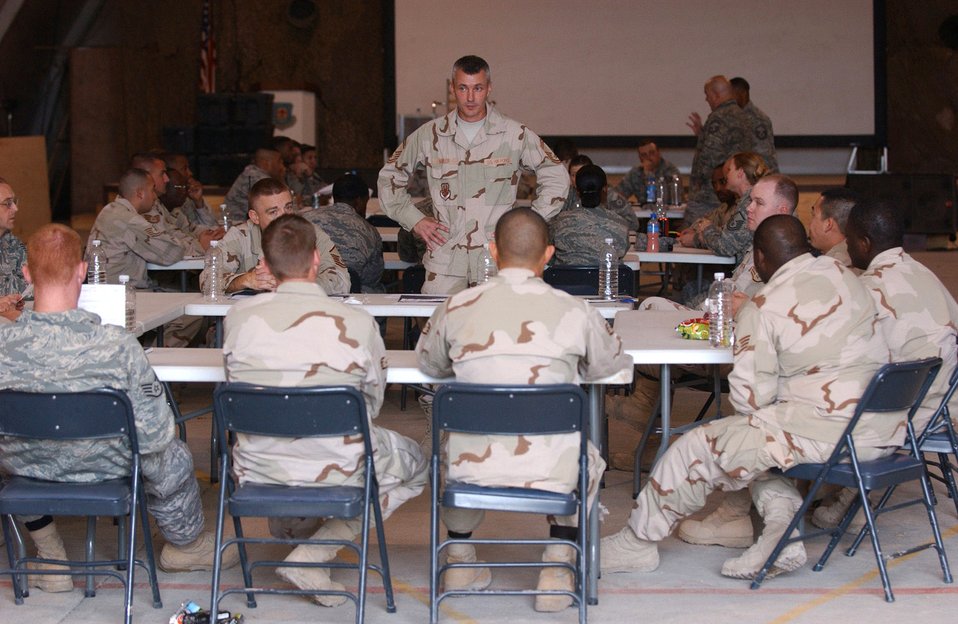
Senior NCOs mentor junior sergeants in Iraq

Senior Master Sgt. Vincent Marler shares his knowledge and experience with mid-tier NCOs in an open forum atmosphere with the senior enlisted force Dec. 8 at Ali Base, Iraq. The Top 3 Council hosted a Senior NCO Mentorship Seminar for mid-tier enlisted Airmen. Sergeant Marler is assigned to the 407th Expeditionary Operations Support Squadron and is deployed from Whiteman Air Force Base, Mo.